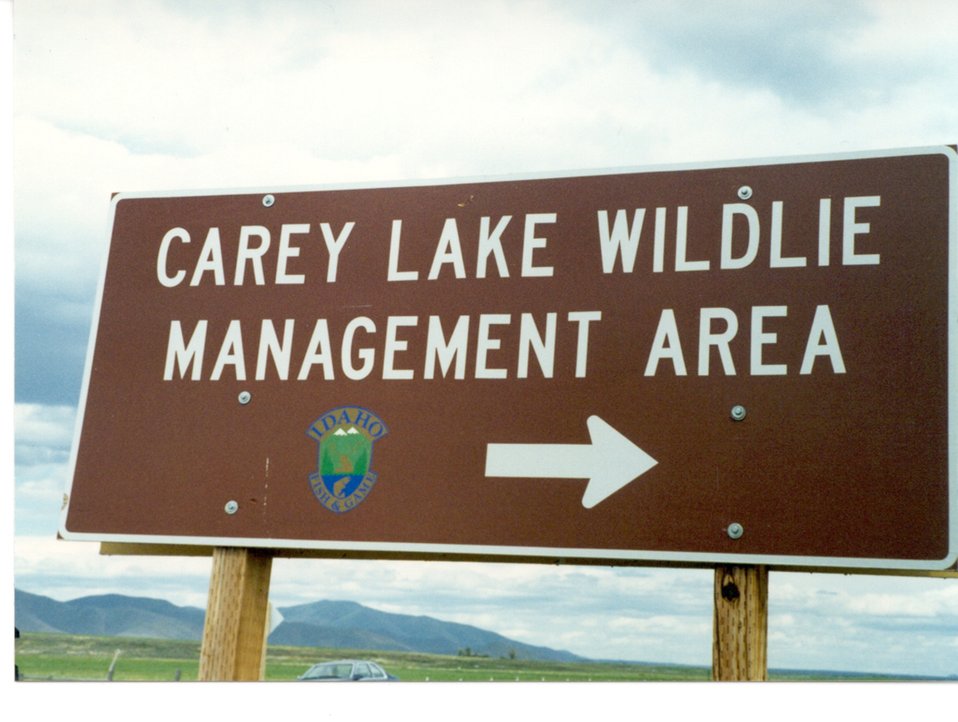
Carey Lake Wildlife Area sign Craters of the Moon Shoshone Field Office USRD Upper Snake River District